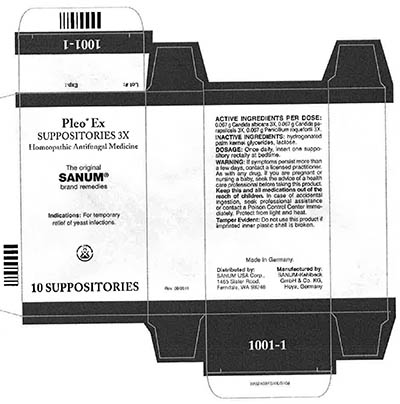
RECALLED – Homeopathic Drug Products

March 18, 2014 – Product Recall – Terra-Medica Issues Voluntary Nationwide Recall of Specified Lots of Pleo Homeopathic Drug Products Due to the Potential for Undeclared Penicillin.